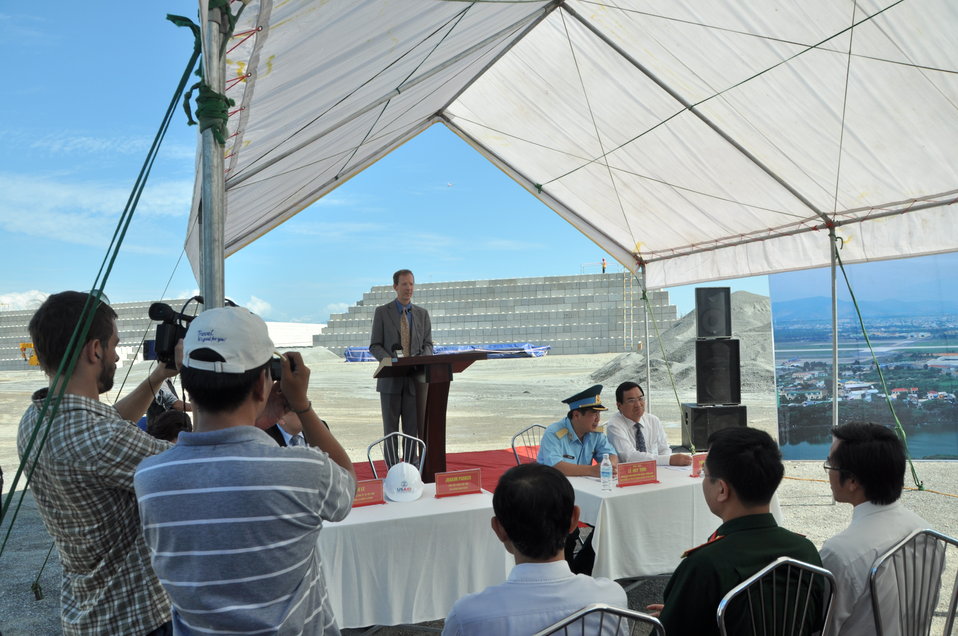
Media Tour of Environmental Remediation of Dioxin Contamination at Danang Airport

USAID Mission Director Joakim Parker addresses the media
Danang, Vietnam
April 24, 2013